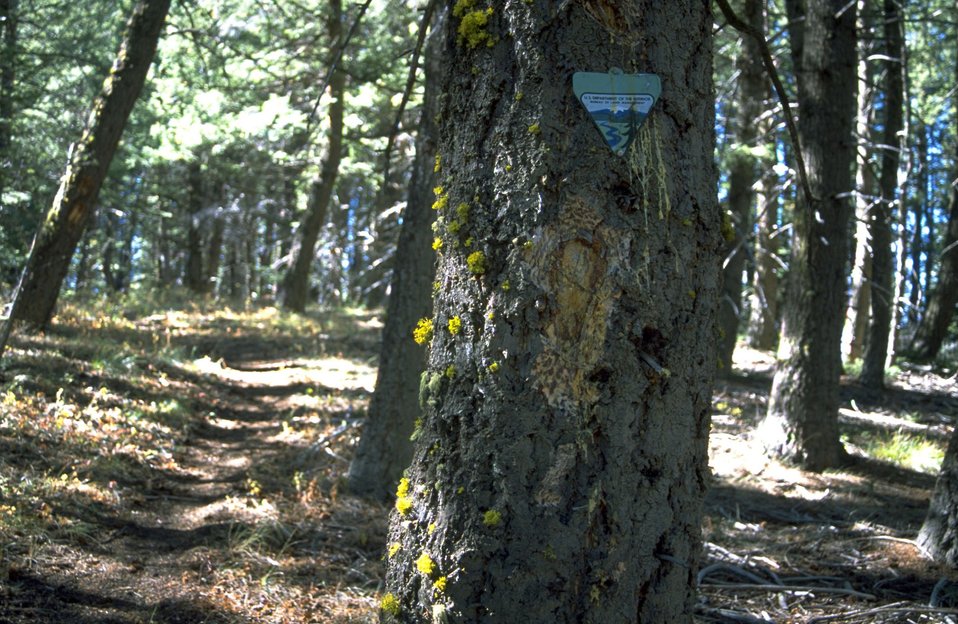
BLM logo on tree that has been blazed